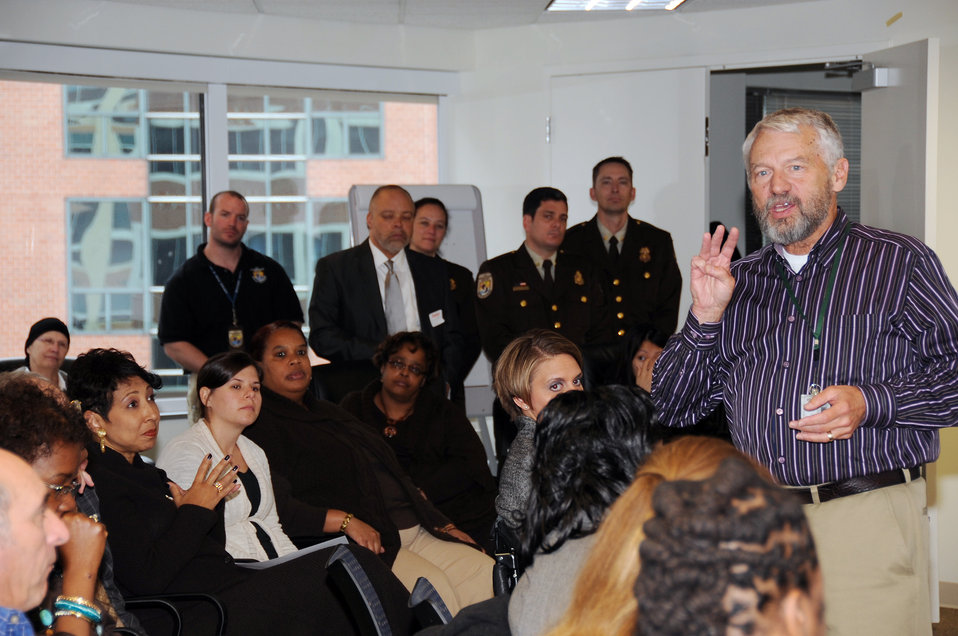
Honoring and Celebrating our Veterans

11.07.2012 Employees gathered in the Arlington Office to honor FWS Veterans